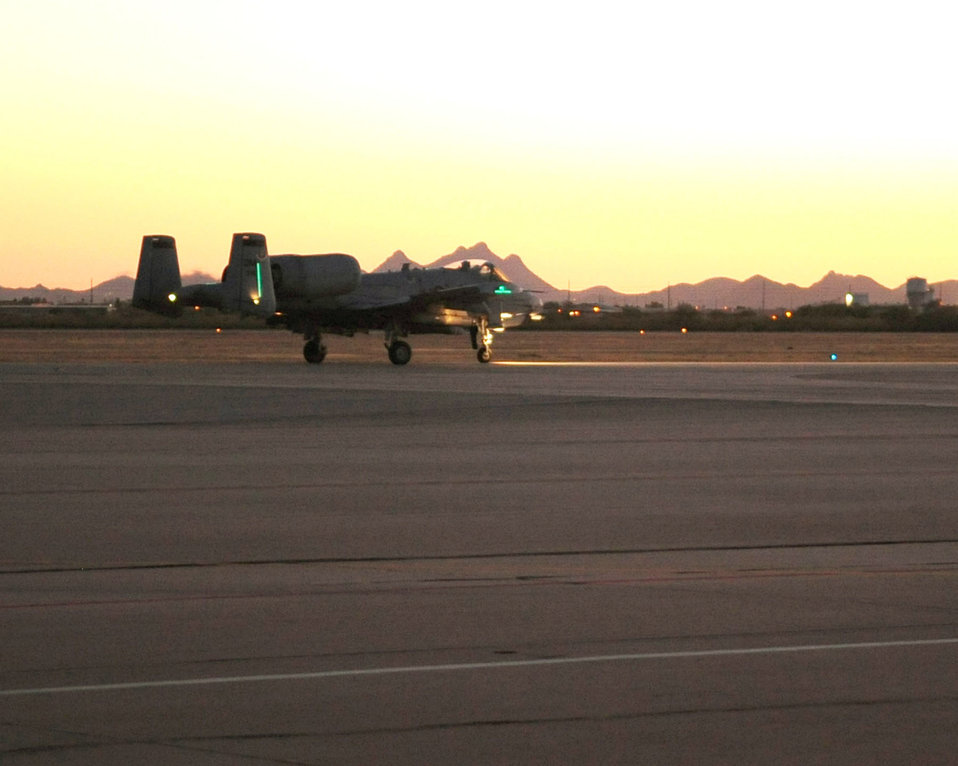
A-10 qualification

An A-10C Thunderbolt II moves down the taxiway at David-Monthan Air Force Base, Ariz., June 23, 2010, prior to taking off for a night flying mission. As part of the A-10C Pilot Initial Qualification course curriculum all pilots must learn to execute night flying missions through six hours of academic classes, five hours in the A-10 flight simulator and eight training flights.